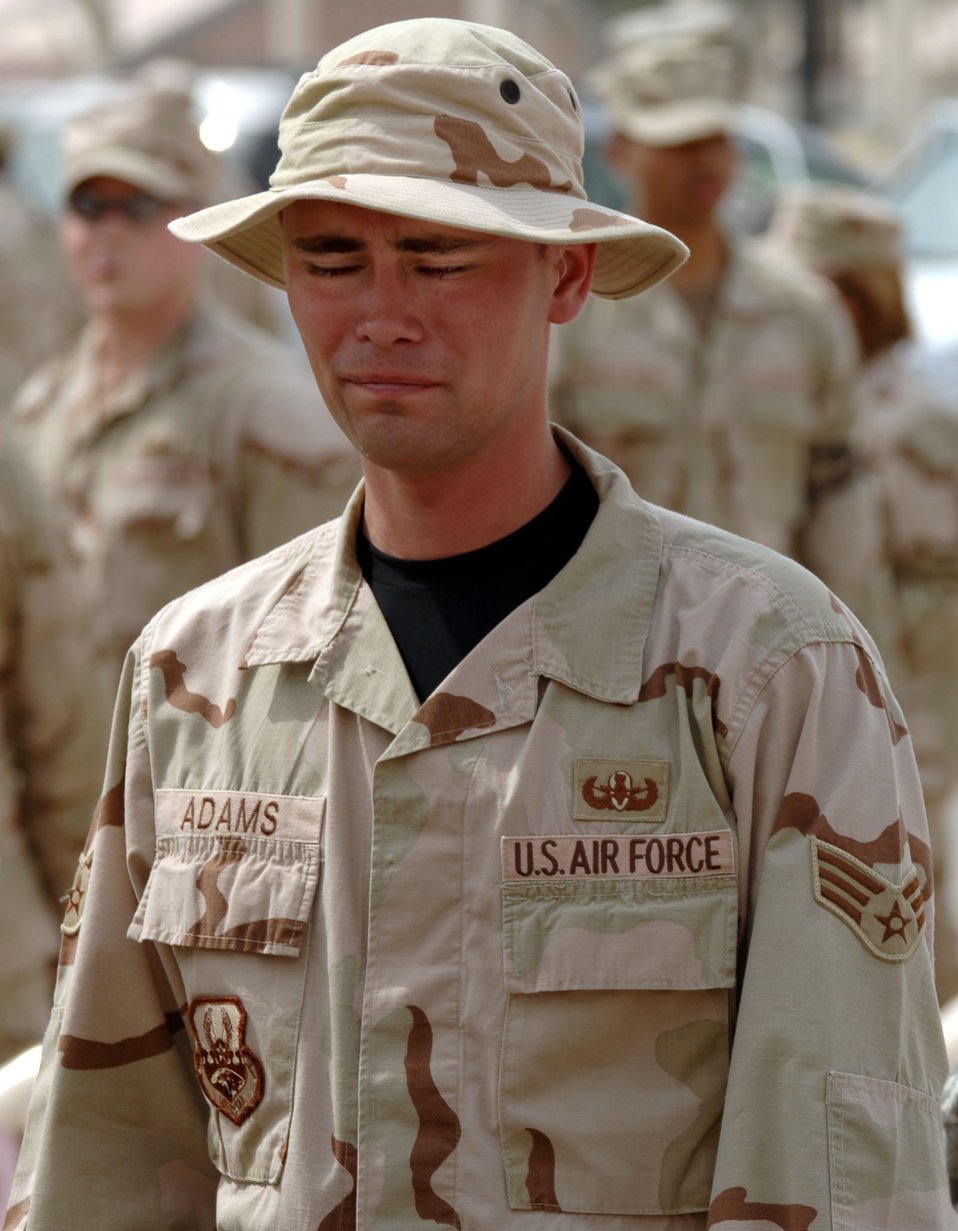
Memorial held for Airman killed in Operation Iraqi Freedom

Senior Airman James Adams mourns at a memorial service for his supervisor, Tech. Sgt. Walter Moss, on Saturday, April 1, 2006, at Sather Air Base, Iraq. Sergeant Moss, a 447th Expeditionary Civil Engineer Squadron explosive ordnance disposal flight technican, died in an explosion during safing operations near Baghdad March 29. Sergeant Moss was the first Airman from Sather AB killed in action during Operation Iraqi Freedom.